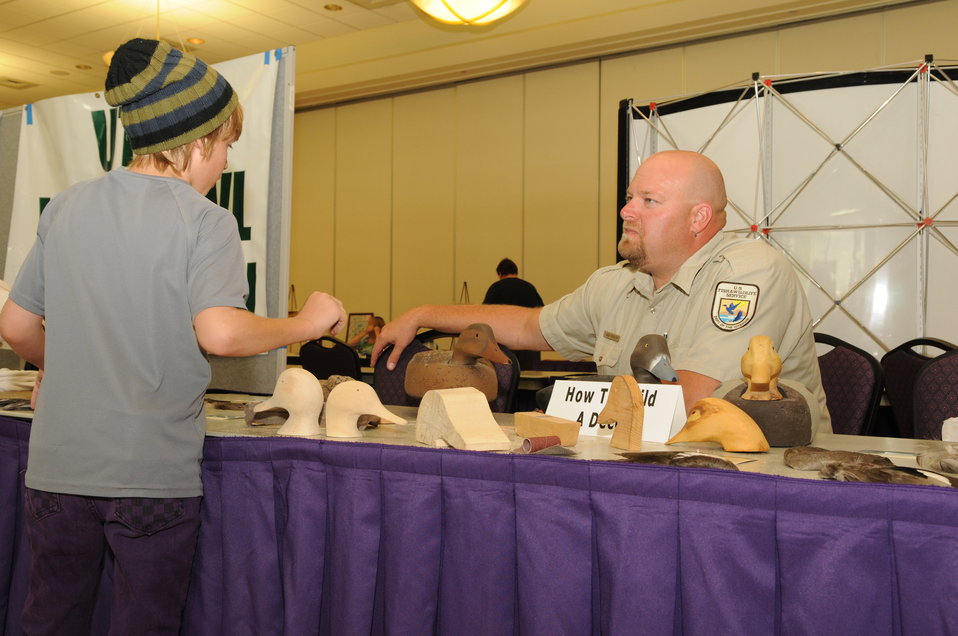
Youth Outreach

The U.S. Fish & Wildlife Service sponsored the 2012 Federal Duck Stamp Art Contest September 28 and 29 in Ogden, Utah, at Weber State University. A panel of five judges was responsible for choosing the art work used to design the 2013-2014 Migratory Bird Hunting and Conservation Stamp.